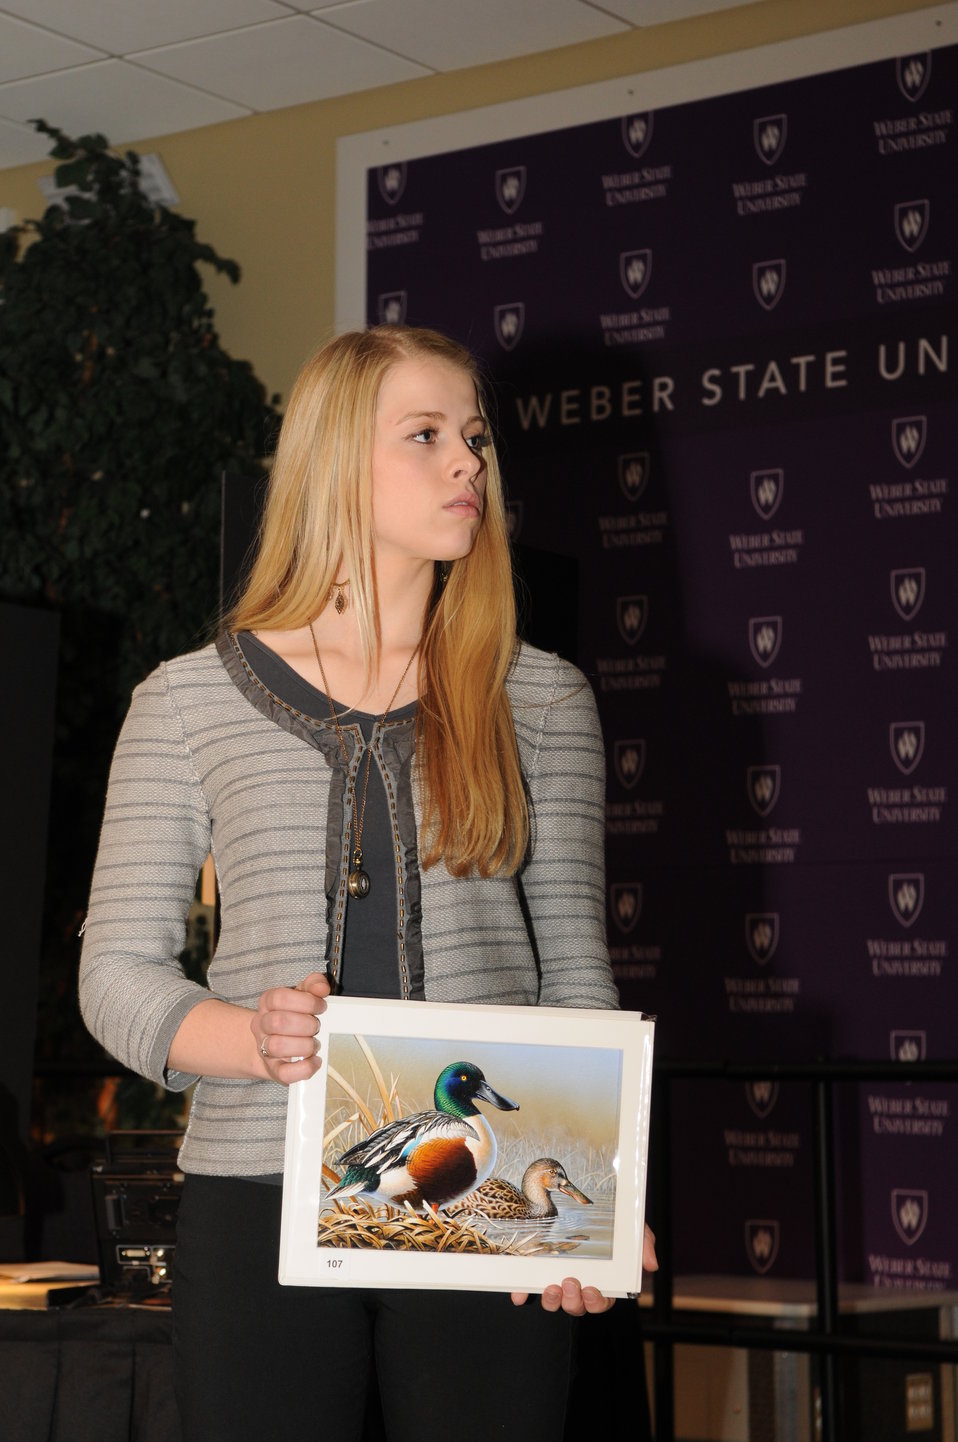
Artwork Presenter

The U.S. Fish & Wildlife Service sponsored the 2012 Federal Duck Stamp Art Contest September 28 and 29 in Ogden, Utah, at Weber State University. A panel of five judges was responsible for choosing the art work used to design the 2013-2014 Migratory Bird Hunting and Conservation Stamp.